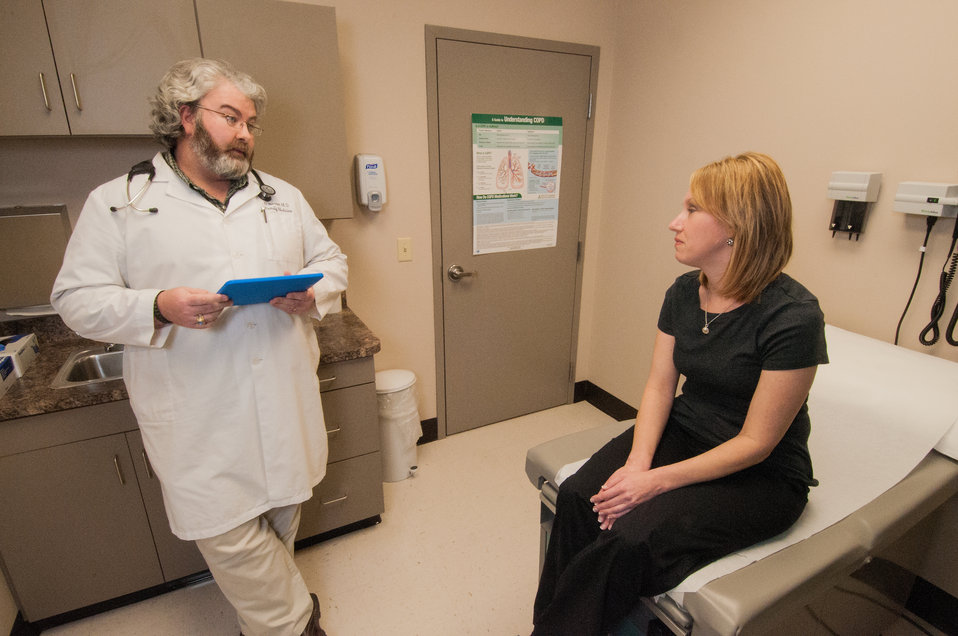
R.J. Taylor Memorial Hospital, Inc. Family Medicine Physician Dr. Albert Warren, MD consults with a patient and records the patient’s symptoms on an electronic tablet in Hawkinsville, GA on Mar. 6, 2013. The hospital is a licensed private, not-for-profit acute care facility providing emergency, specialty and primary health care in a rural area of Georgia that has a high percentage of people living below the state average poverty level and considered most economically distressed. The hospital has purchased an Electronic Medical Records System under an incentive program by the Federal government through the U.S. Department of Agriculture (USDA) Rural Development (RD) Community Facilities Loan (CF) that ensures fiscally responsive access to superior quality integrated health care.